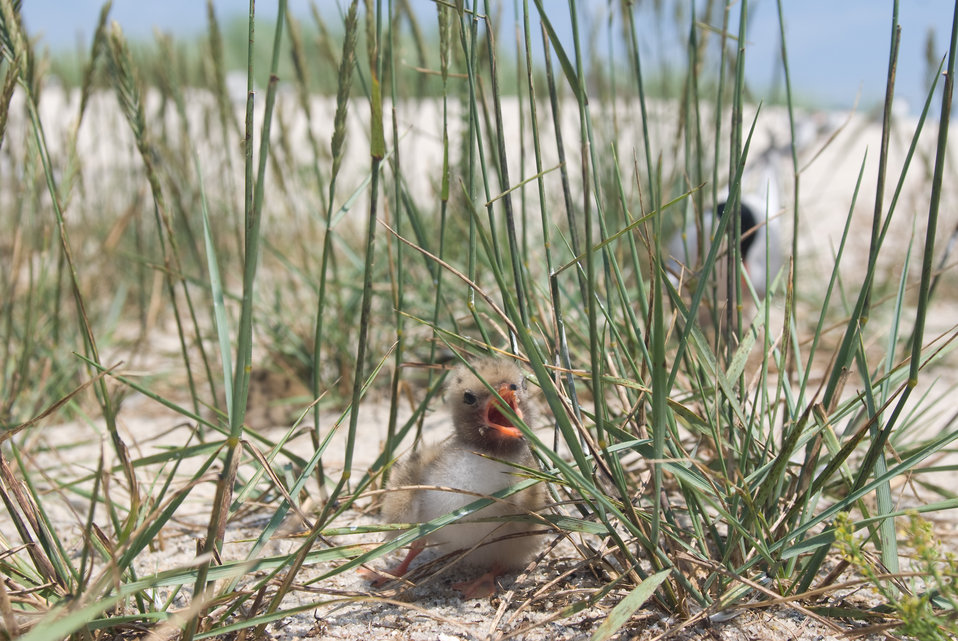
Tern chick and adult at Monomoy National Wildlife Refuge in Massachusetts.